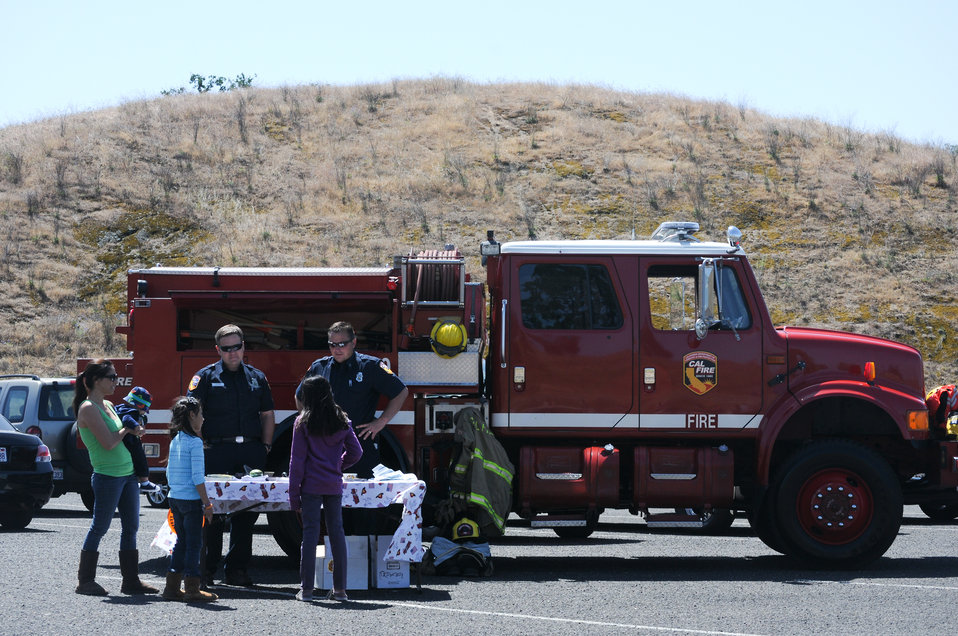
Kids Fishing Day at Hensley Lake

HENSLEY LAKE, Calif. (April 30, 2011) – California Department of Forestry and Fire Protection Madera-Mariposa-Merced unit fire fighters were on hand to talk water safety at the 15th annual Kids Fishing Day here April 30. The Sacramento District’s Hensley and Eastman lakes take turns hosting the event, which provides free loaner gear and clinics on fishing techniques and water safety to help connect kids with the outdoors.